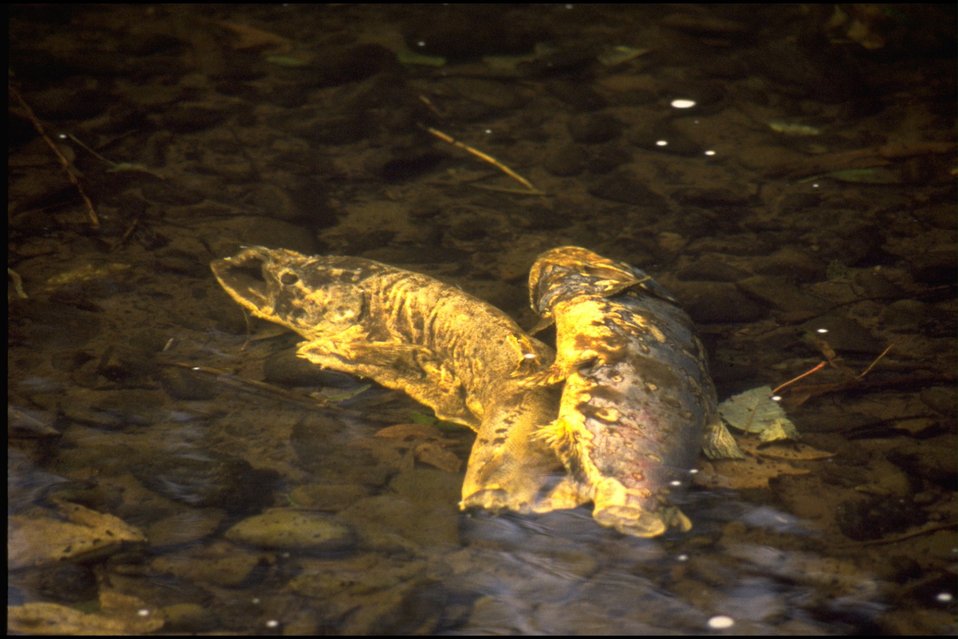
Salmon Watch Program (Fish Creek) - Crow/Applegate Schools.